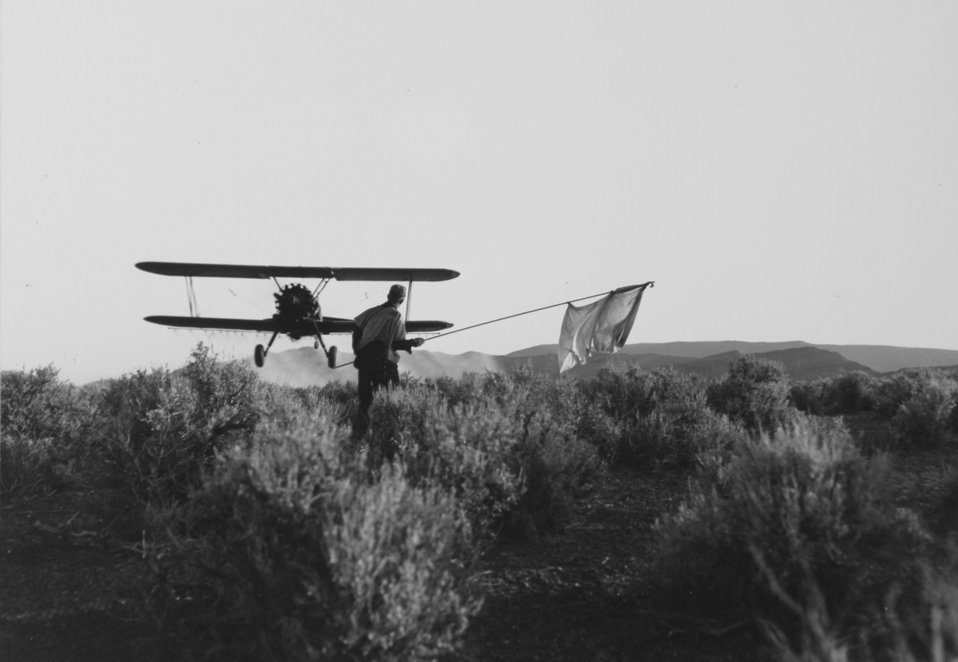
Antelope Springs brush and seeding southeast of Fields, Oregon May 1966